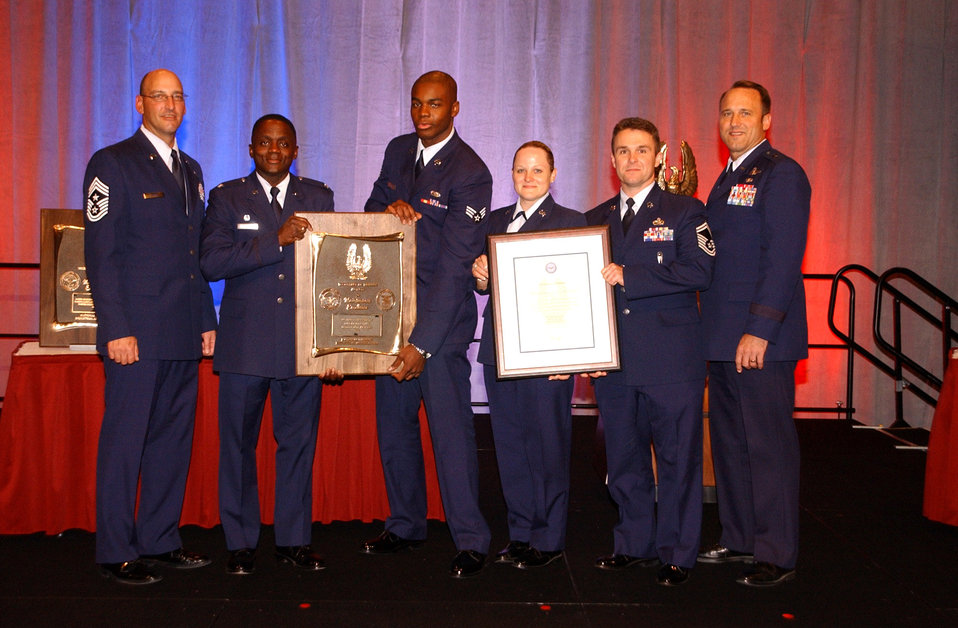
Luke maintenance group takes home DOD award

Chief Master Sgt. Mitchell Stippel, Col. Algene Fryer, Senior Airman Ntungwe Sobe, Tech. Sgt. Lynette Castillo, Senior Master Sgt. Darren Dykes and Brig. Gen. Tom Jones stand holding the plaques they received at the Department of Defense Maintenance Awards ceremony Nov. 15 in Orlando, Fla. The award named Luke Air Force Base?s 56th Maintenance Group as one of the DOD?s top six maintenance organizations for 2007. U.S. Air Force photo/2nd Lt. Bryan Bouchard)